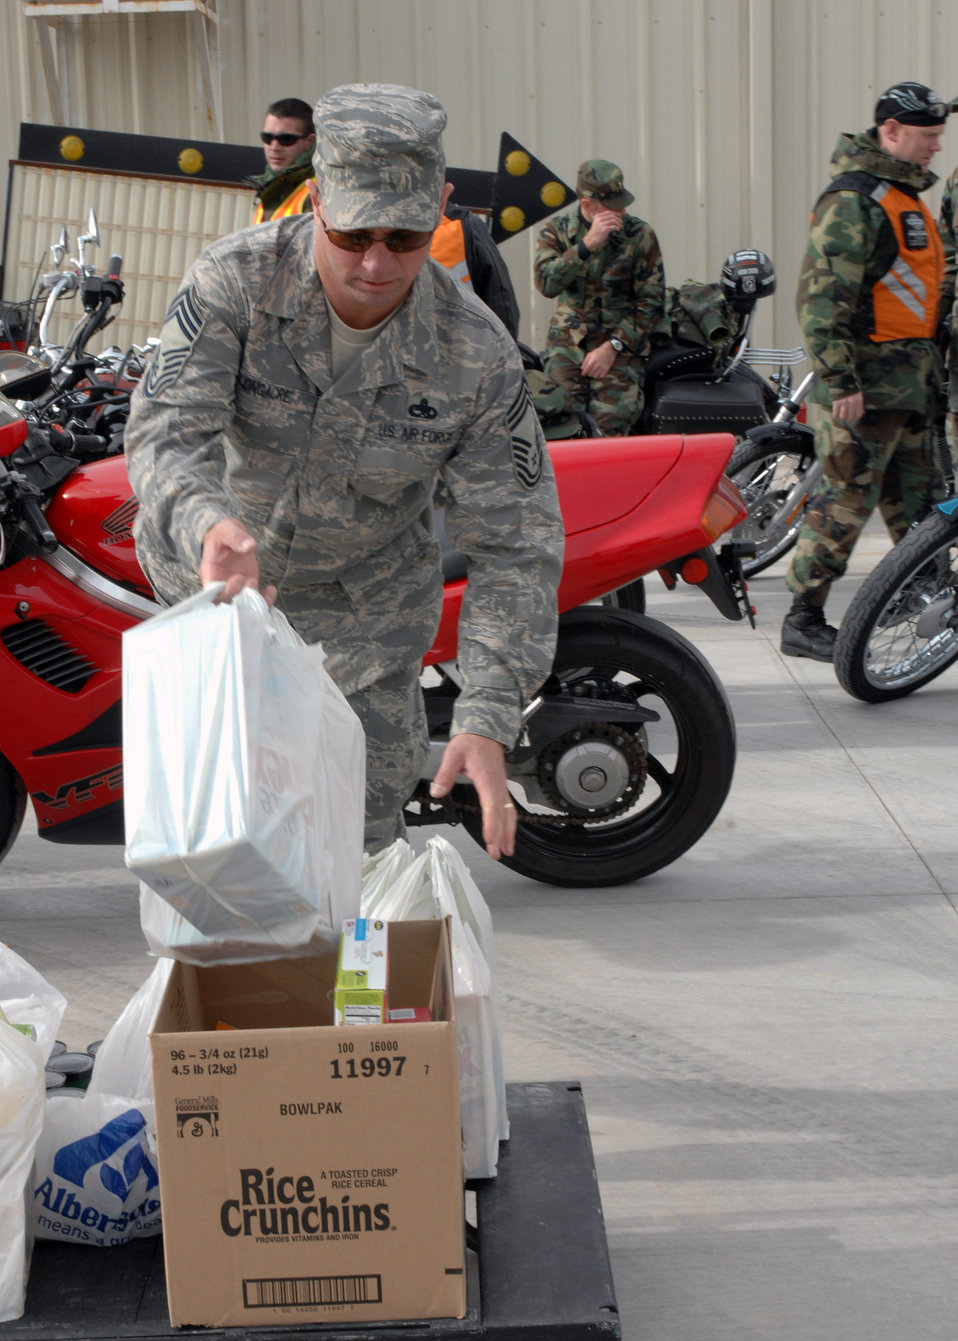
Bikers roll out meals on wheels

Chief Master Sgt. Kenneth Longacre drops bags of food into a box at the Clovis Food Bank Dec. 6 in New Mexico. Chief Longacre is the 27th Special Operations Mission Support Group superintendent and member of the motorcycle riders group at Cannon Air Force Base, N.M. The group took donated food to the food bank to share in the holiday spirit.